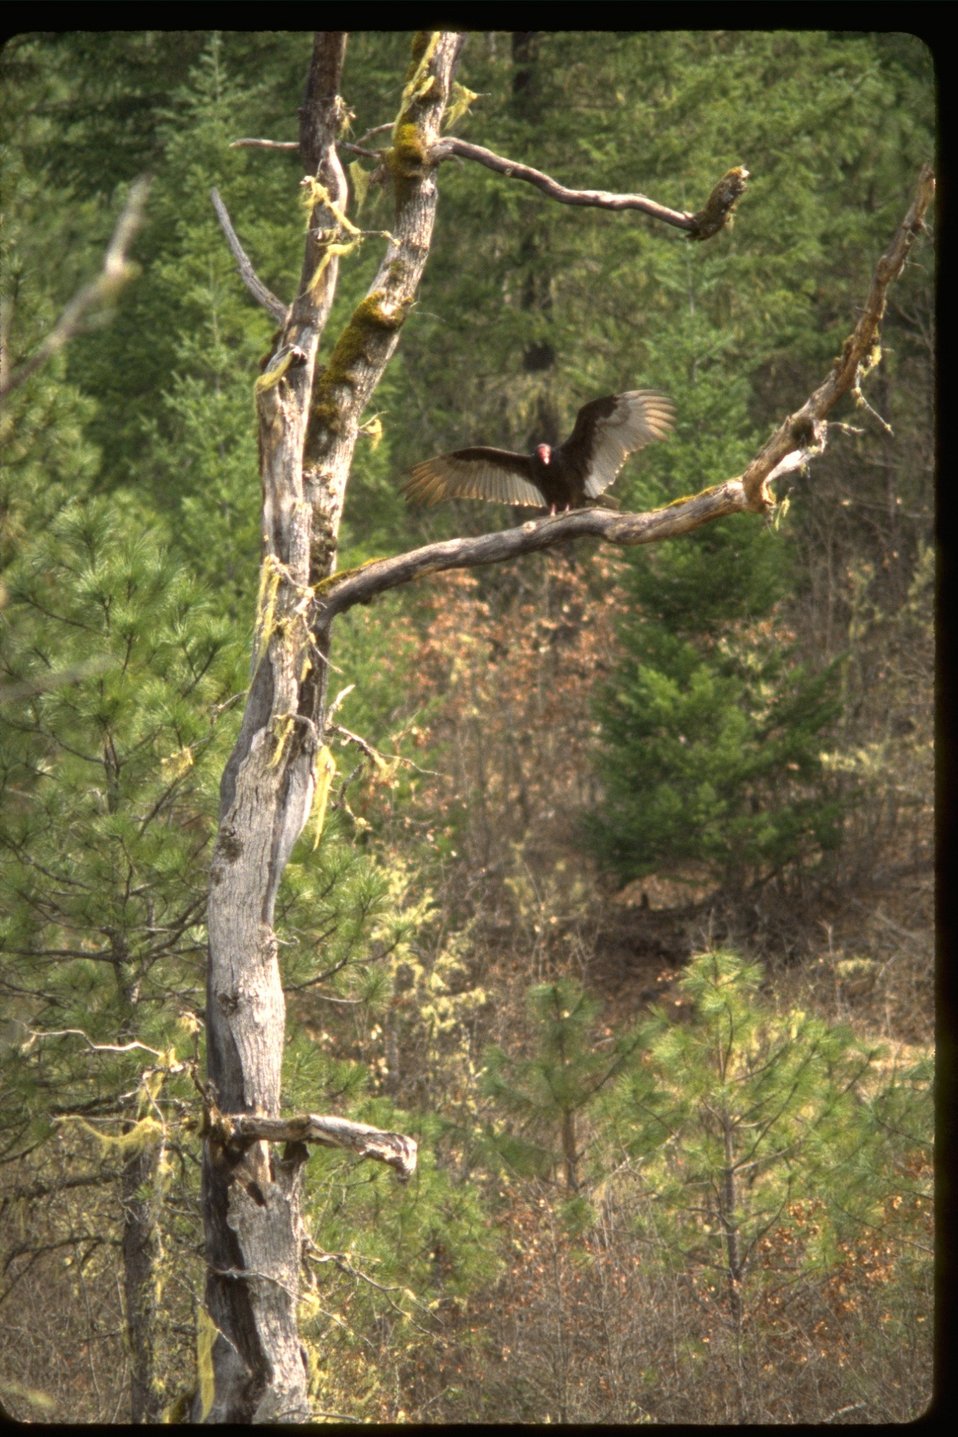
Turkey Vulture preparing for flight from dead tree.